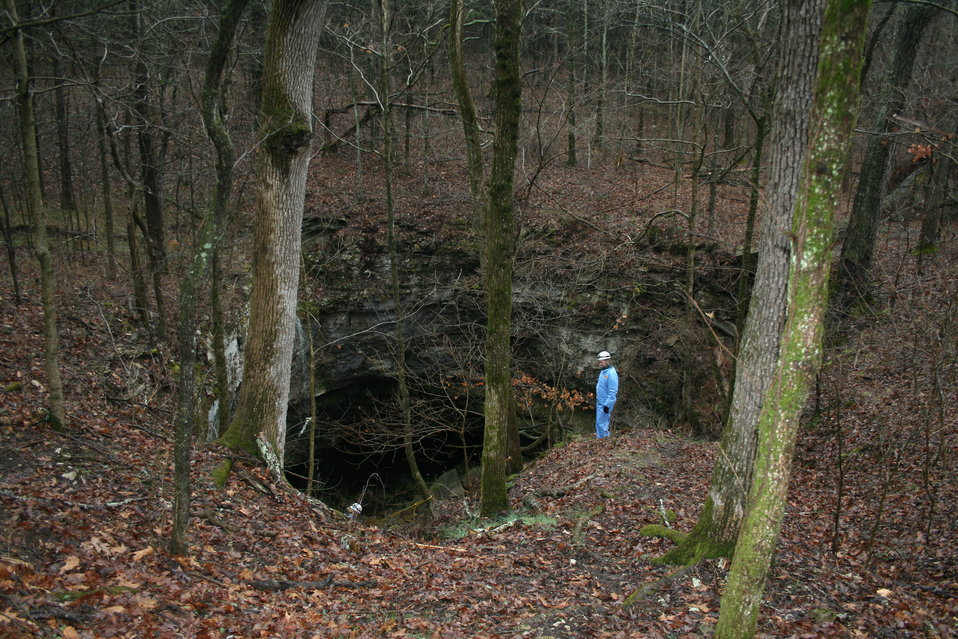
MDC biologist at cave entrance